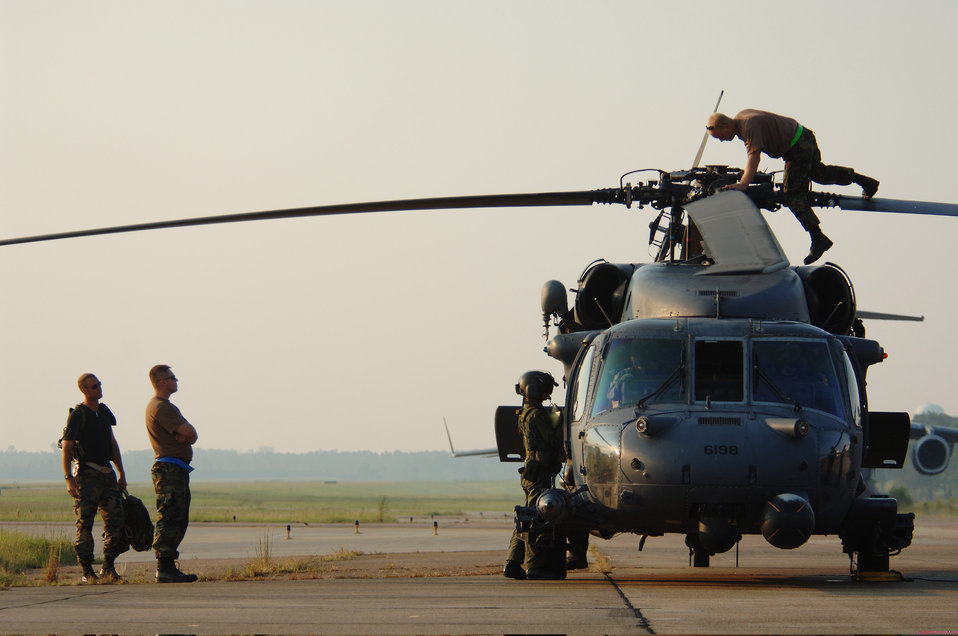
Helicopter mission changes as rescue tempo slows

JACKSON, Miss. -- Maintenance crews work on an HH-60G Pave Hawk rescue helicopter after it broke before launching. Aircrews from active and Reserve units are here working to rescue people trapped by the flood waters of Hurricane Katrina's destruction along the U.S. southern coast.